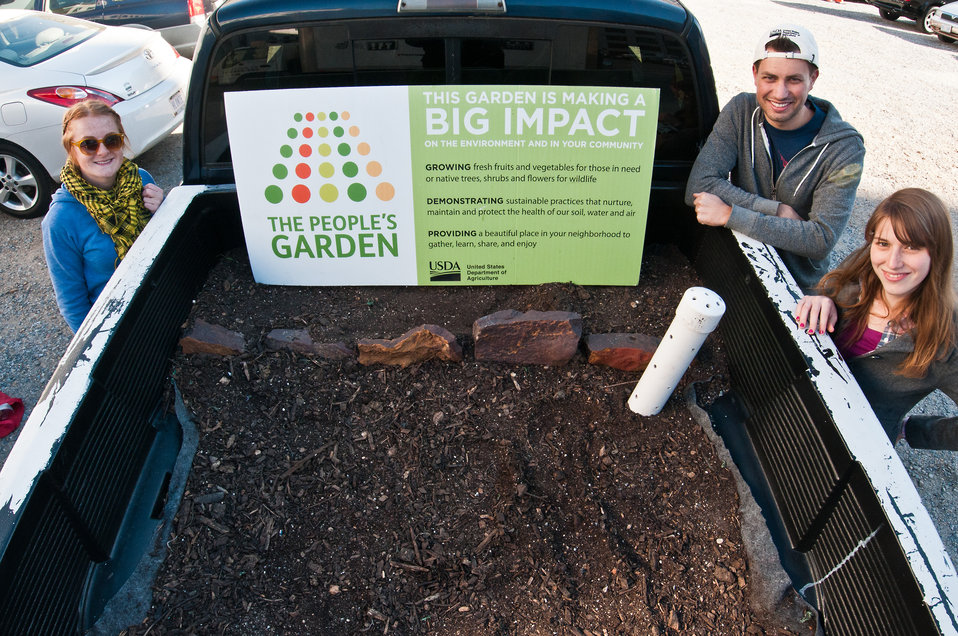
Left to right, D.C. Central Kitchen’s Local Initiatives and Procurement Coordinator Joelle Johnson, The Campus Kitchens Project’s Matt Schnarr, and Nutrition Out Reach Coordinator Lydia Mills before planting begins in the Truck Farm truck bed in Washington, D.C., on Friday April 6, 2012. The Truck Farm is a D.C. Central Kitchen and U.S. Department of Agriculture’s People’s Garden Initiative partnership. Like other Truck Farms around the country, this trusty pick-up will travel around the city to schools and community sites, teaching children about healthy eating and where their food comes from through the garden display in its truck-bed. Along with other local donors, the People’s Garden Initiative supports this “edible exhibit” by providing seedlings and educational materials. Mr. Schnarr and Ms. Mills are on staff with D.C. Central Kitchen for one year as part of their year of AmeriCorps VISTA service.